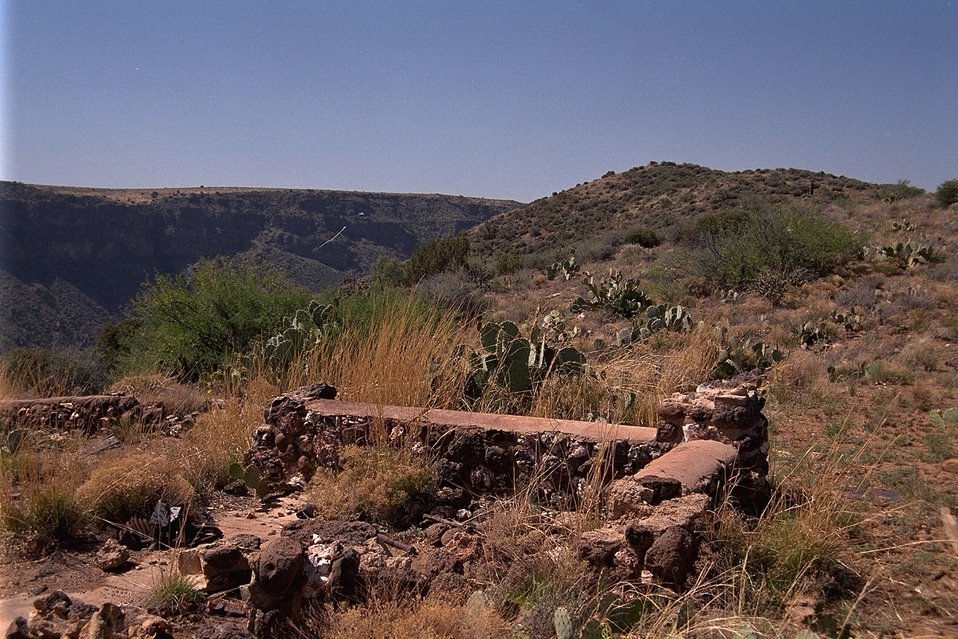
A photograph taken at the Richinbar Mine site in the Agua Fria National Monument.